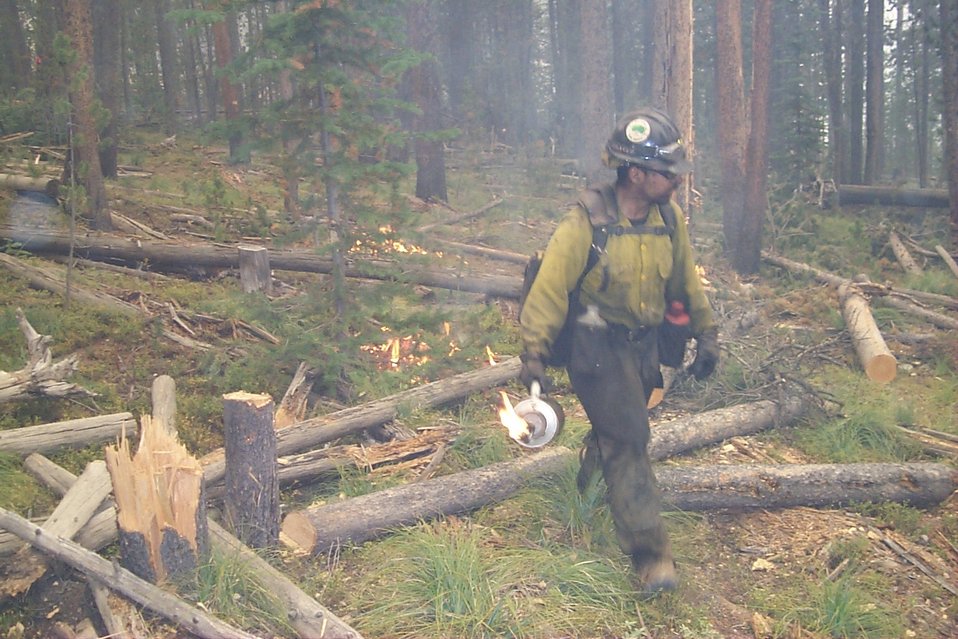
Conrolled burn Fire Clearwater Fire Salmon Field Office USRD Upper Snake River District